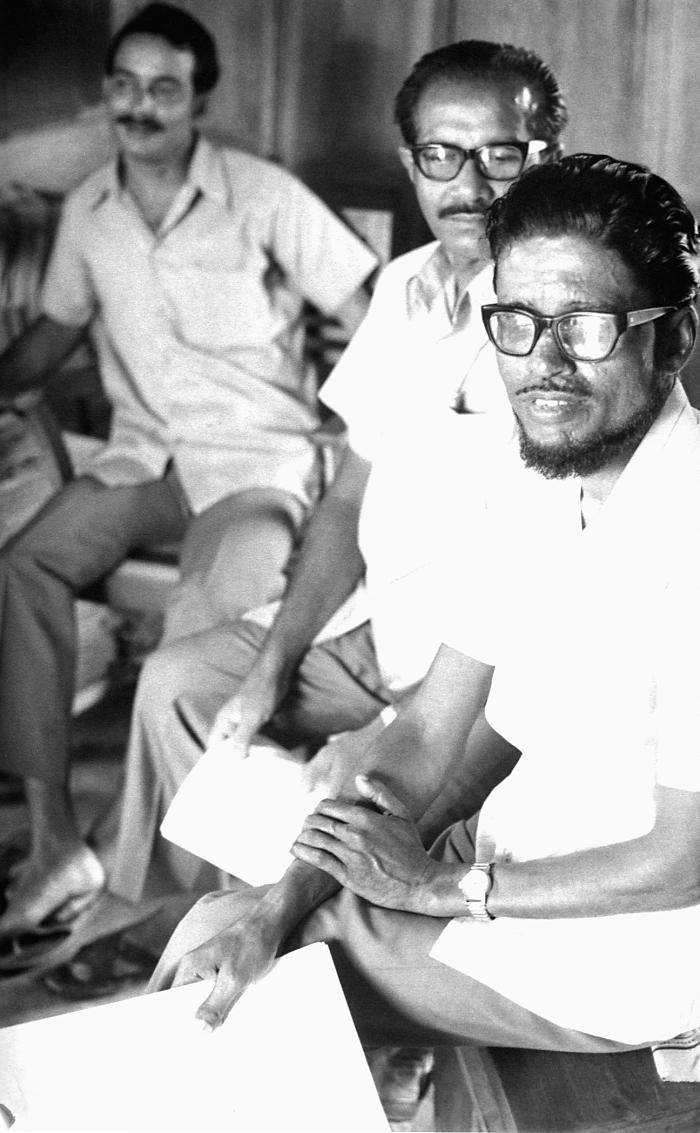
These were local smallpox eradication team members who'd been seated as they were discussing findings and their progress. The man seated in front wearing glasses, was one of the best district leaders in the war against this dreaded disease. Dr. Stanley Foster, a former E.I.S. officer, remembers him as being highly dedicated, and an overall wonderful human being. Local residents who became resident vaccinators, played a profound role in achieving a successful outcome to the eradication program. As locals, they were viewed as familiar, and trusted, and spoke the local dialect, thereby, facilitating enhanced communication with fellow inhabitants.